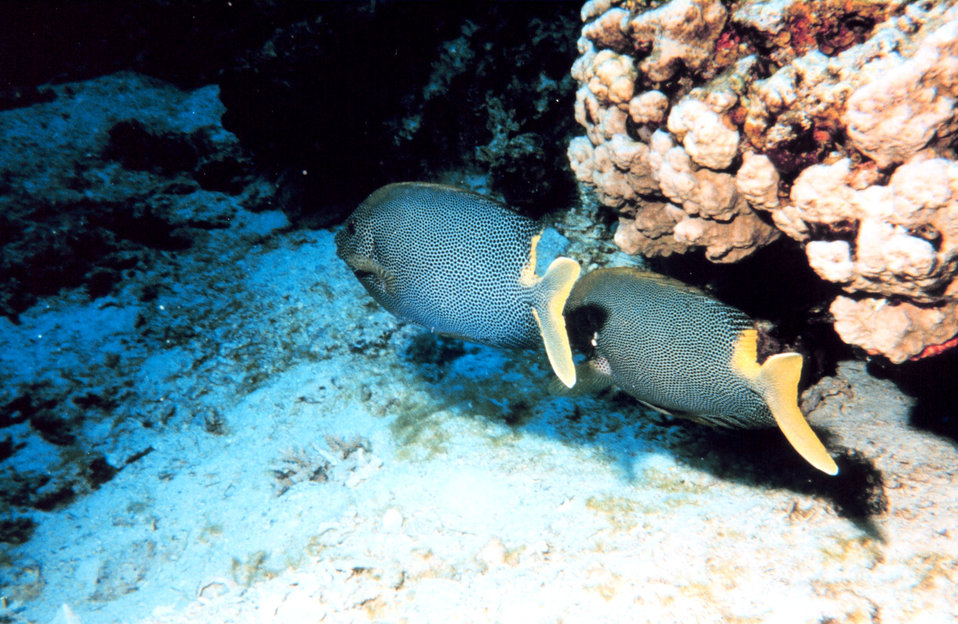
Yellowtailed surgeonfish?